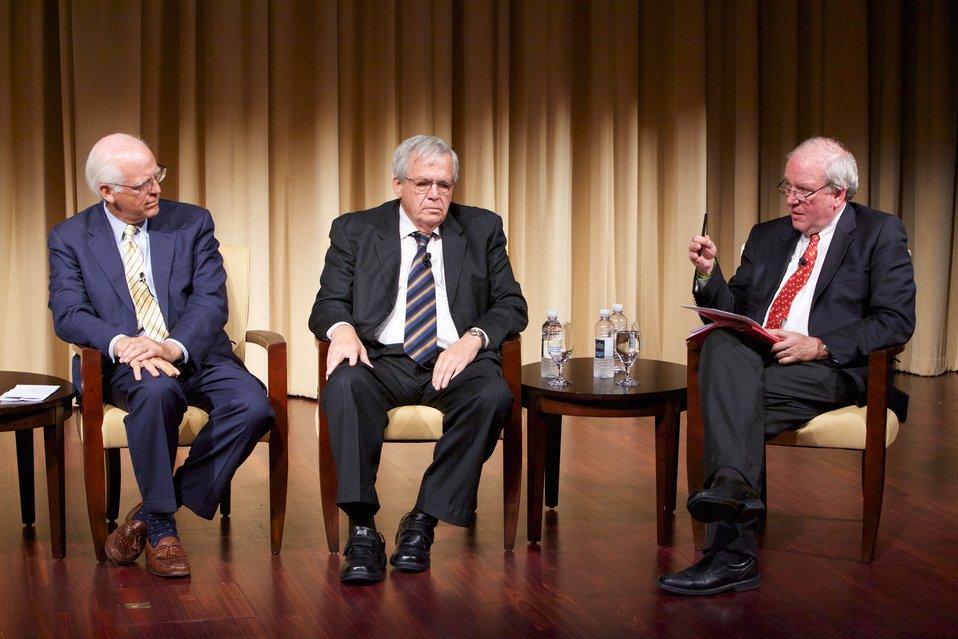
The Role of Congress in International Crises